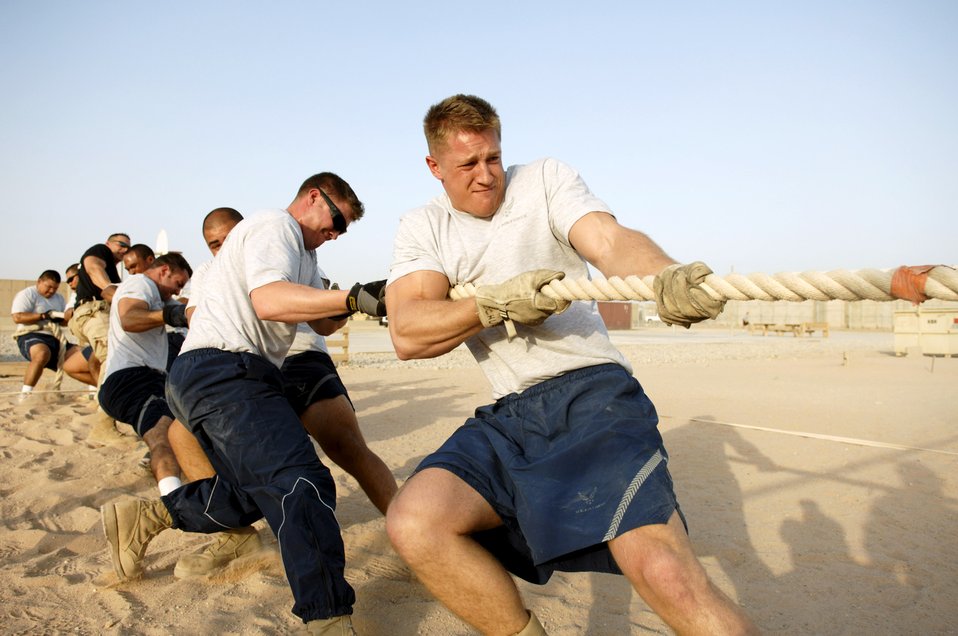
Coalition forces compete at Ali Base

Airman 1st Class Jamie Schulz leads the 407th Air Expeditionary Group tug-of-war team in a match against the Romanian team during the first-ever coalition games Aug. 23 at Camp Adder, Iraq. The Air Force team took second place in the event. The coalition games brought together different sport teams from the Air Force, Army, Navy, Australians and the Romanians to compete for the bragging rights as the best on base. The Air Force came out on top taking first place in five events.